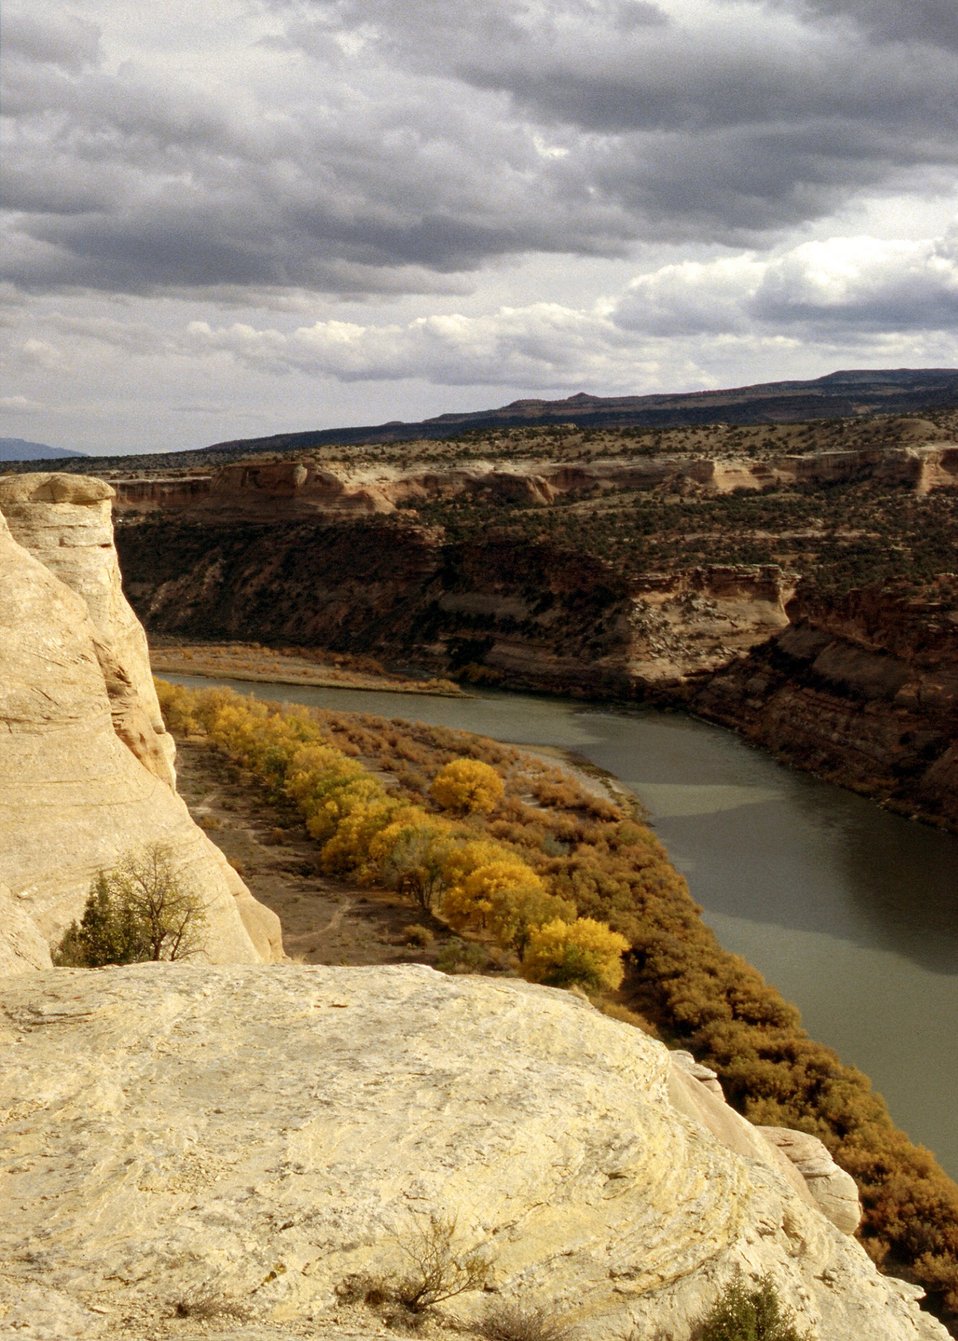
Canyon with fall